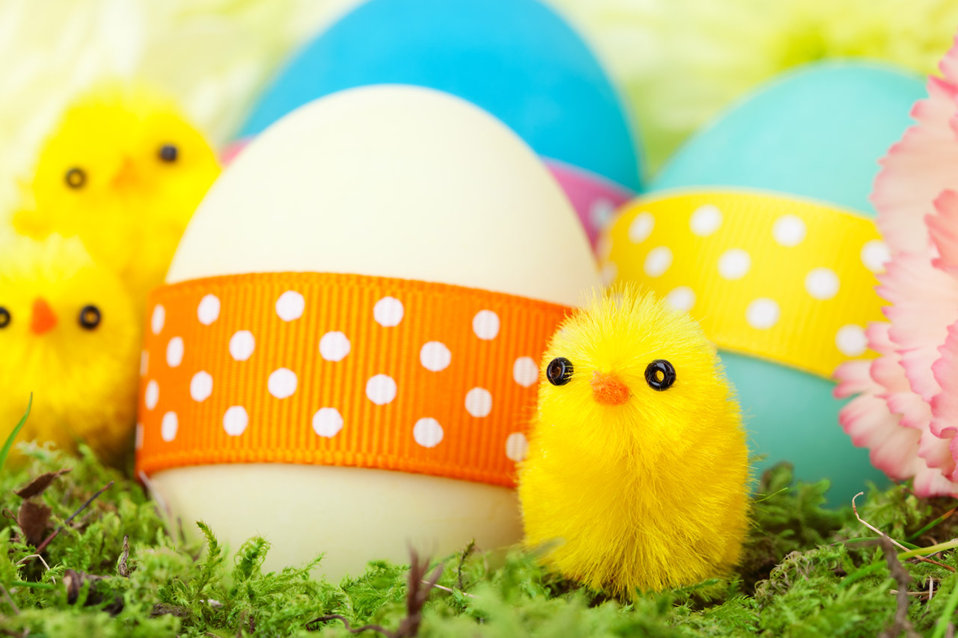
Chicks and easter eggs

Yellow chicks with colorful decorated easter eggs on green grass.